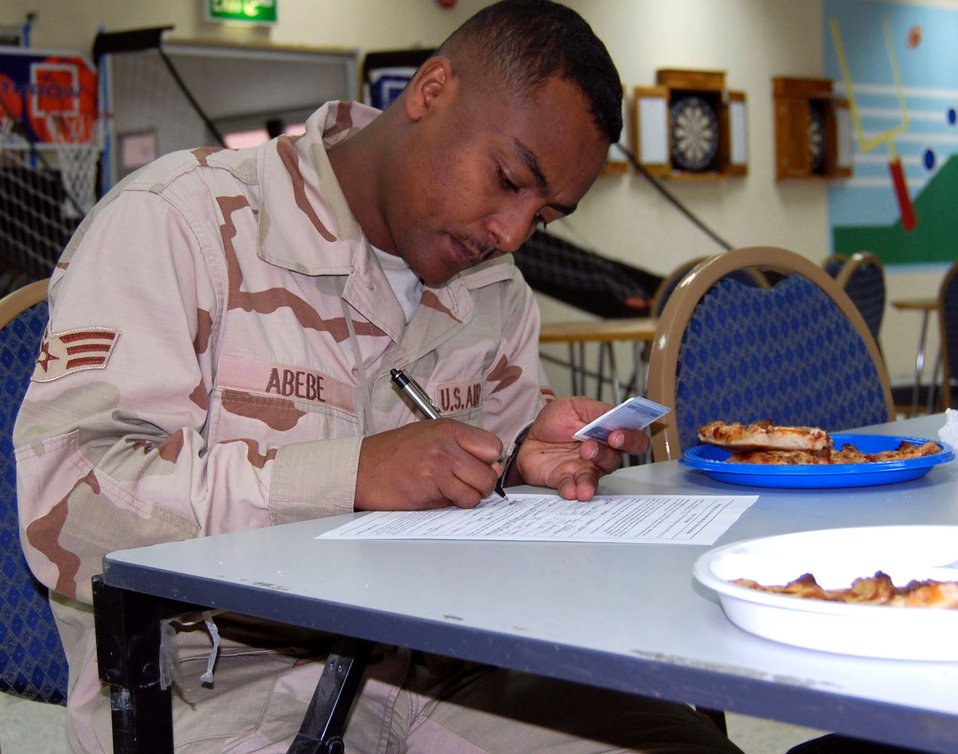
Eagle Cash card: Money spreads its wings

Senior Airman Melaku Abebe fills out an application for an Eagle Cash card Sept. 11 at the Flex Recreation Center in Southwest Asia. Co-sponsored by the Army and the Department of the Treasury, Eagle Cash is a financial management tool to support servicemembers deployed in combat zones and on peacekeeping missions. Airman Melaku is a commander's support staff specialist 386th Expeditionary Services Squadron.